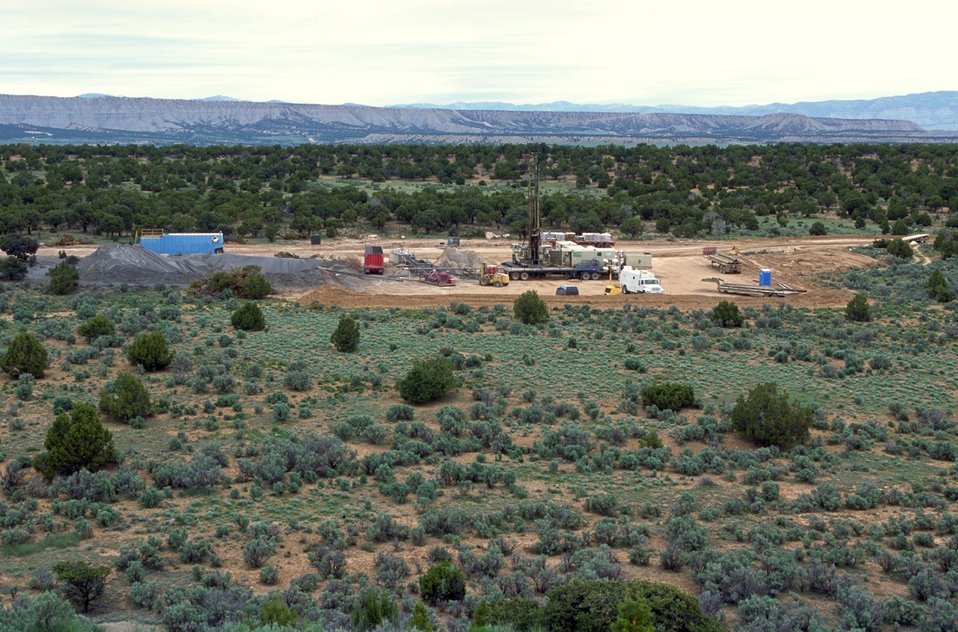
Drilling for coal bed methane near Price, Utah.